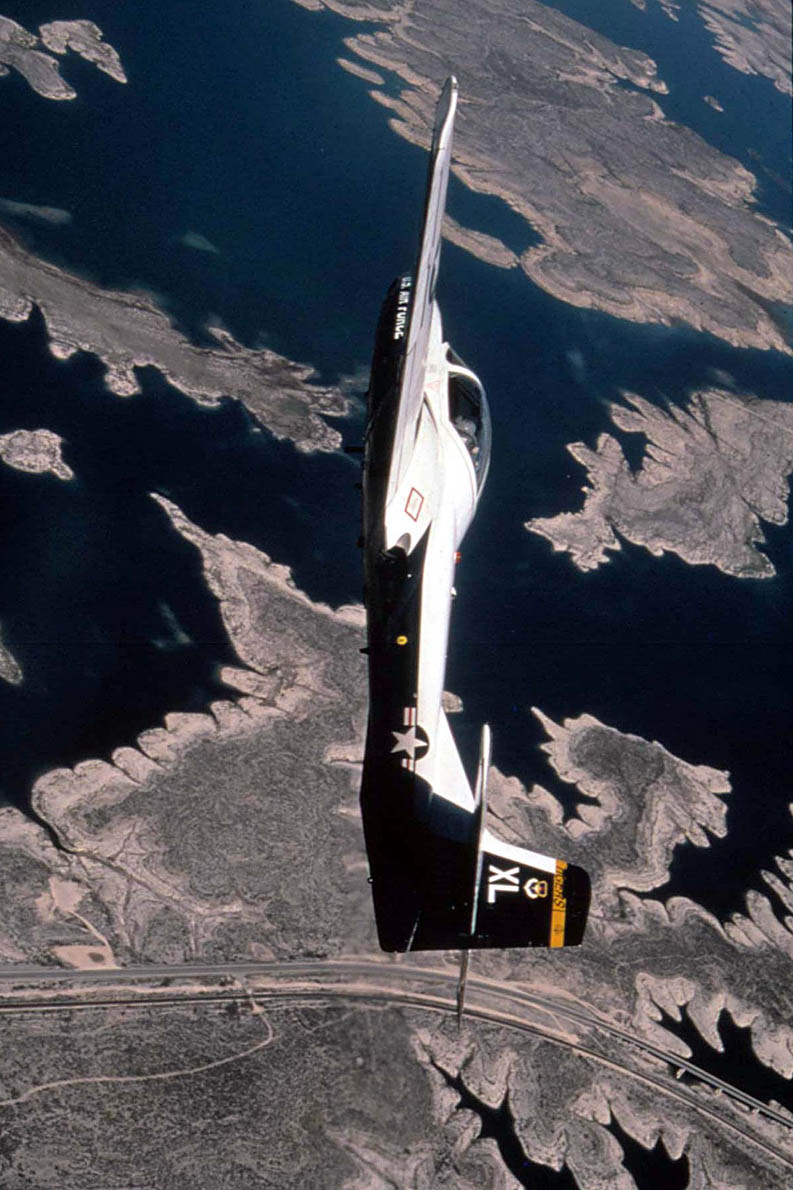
Tweet

FILE PHOTO -- A T-37 Tweet aircraft from the 85th Fighter Training Squadron, Laughlin Air Force Base, Texas, flies over Lake Amistad during a training mission. The T-37 Tweet is a twin-engine jet used for training undergraduate pilots, undergraduate navigator and tactical navigator students in fundamentals of aircraft handling, and instrument, formation and night flying. The twin engines and flying characteristics of the T-37 give student pilots the feel for handling the larger, faster T-38 Talon or T-1A Jayhawk later in the undergraduate pilot training course. The instructor and student sit side by side for more effective training. The cockpit has dual controls, ejection seats and a clamshell-type canopy that can be jettisoned.